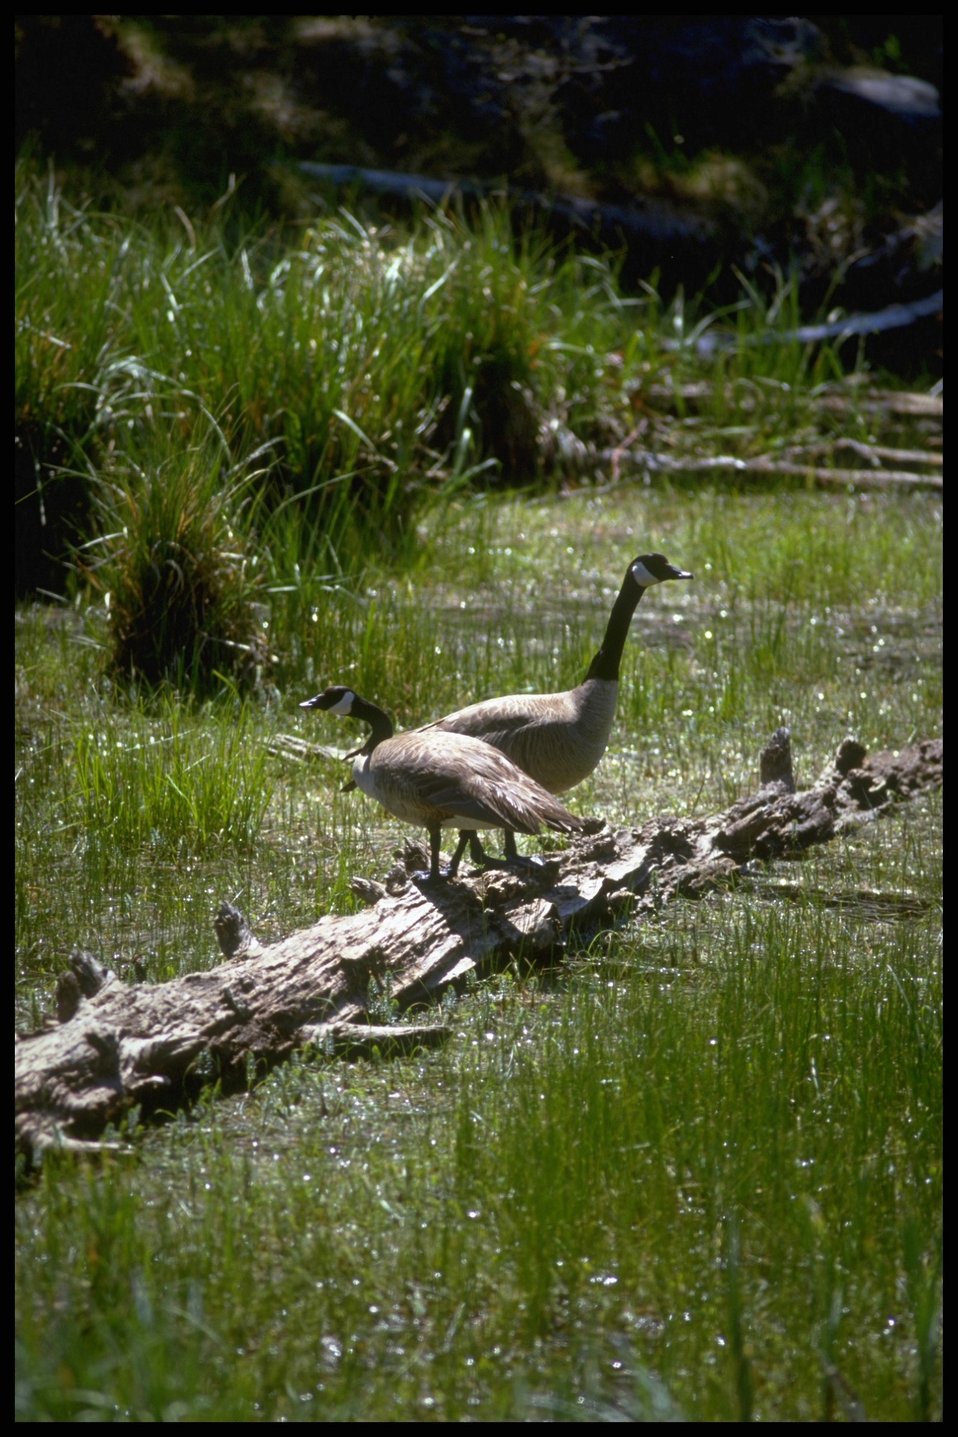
Wild Geese, Lakeview District.